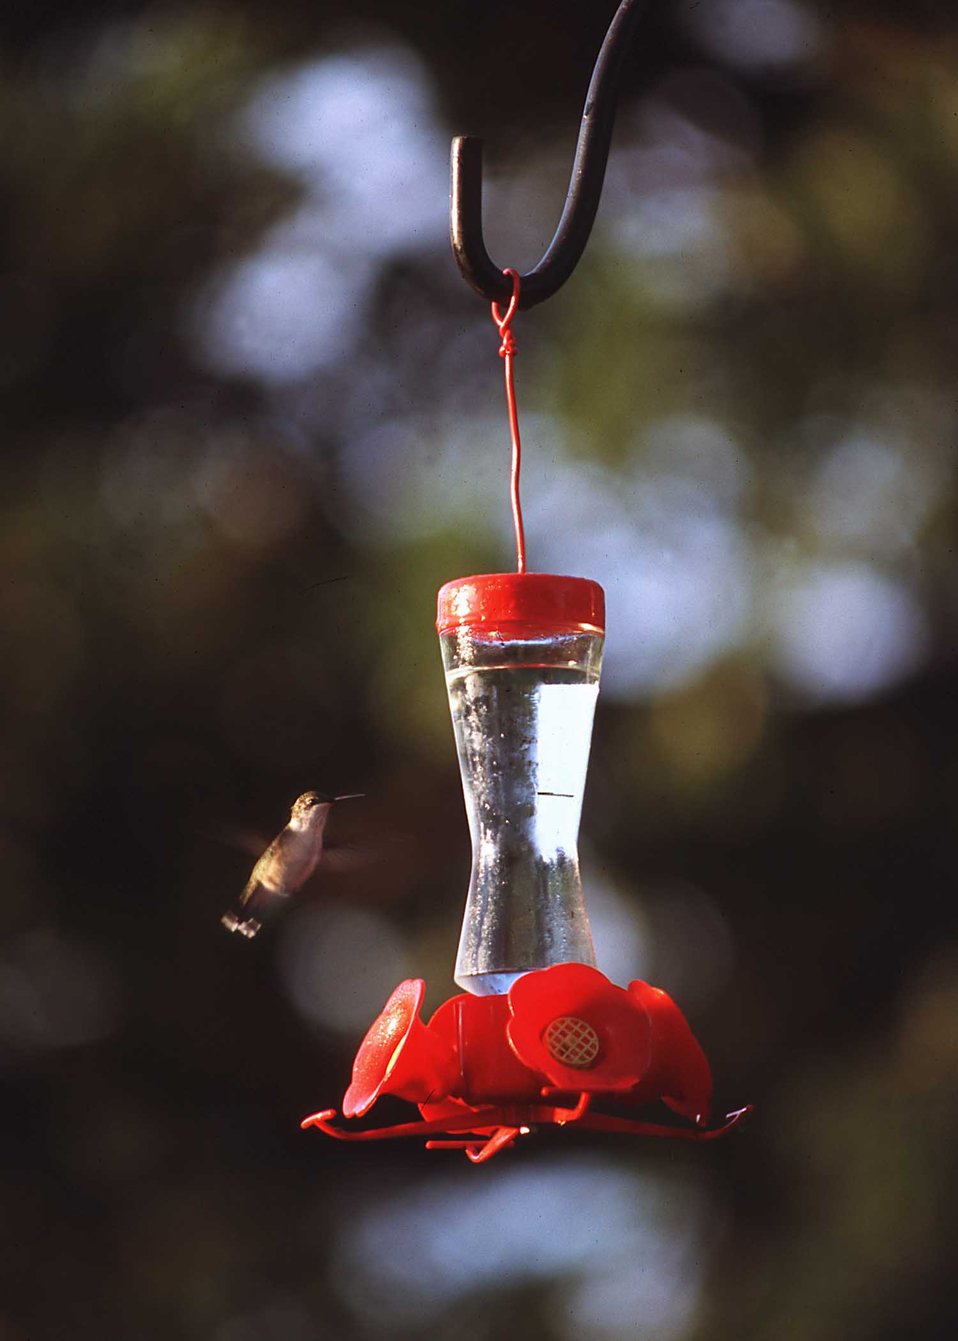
A hummingbird at a feeder